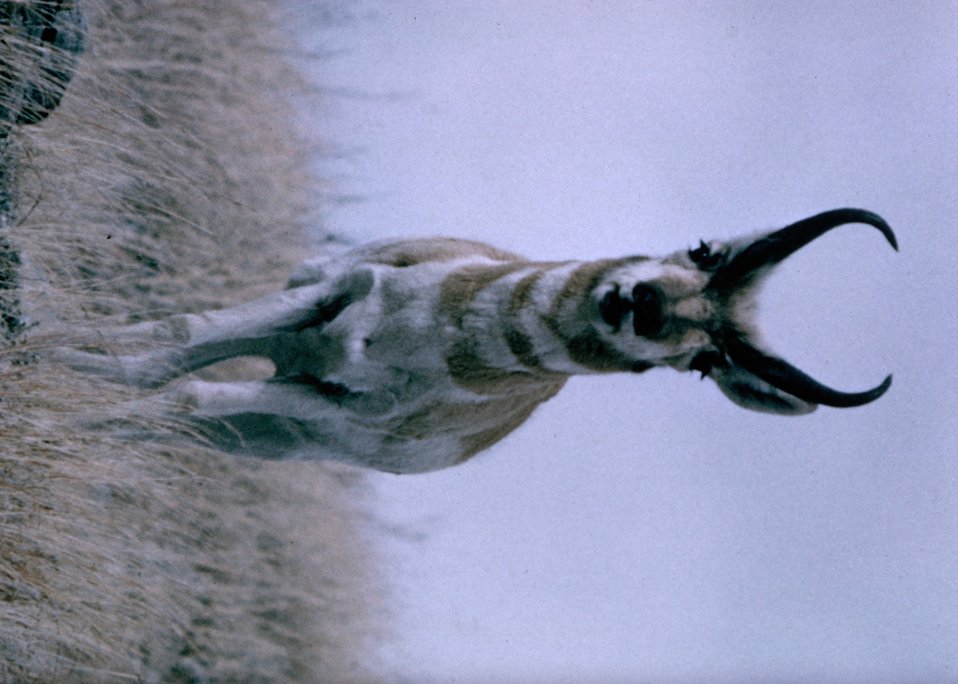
A buck Antelope.